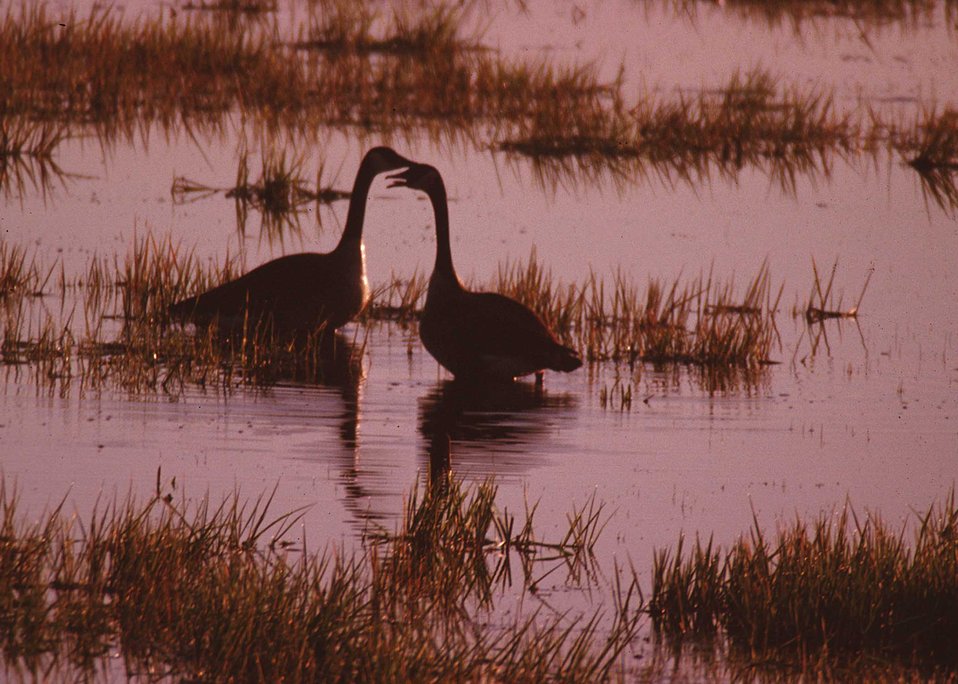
Pair of Canada geese in a temporary pothole wetland in South Dakota.